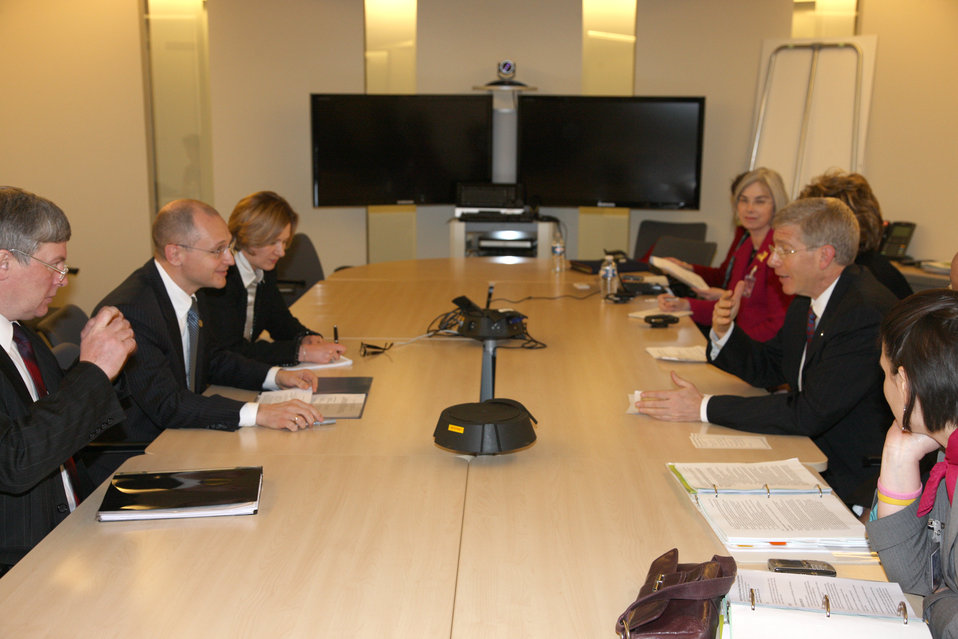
5C3K3812 copy